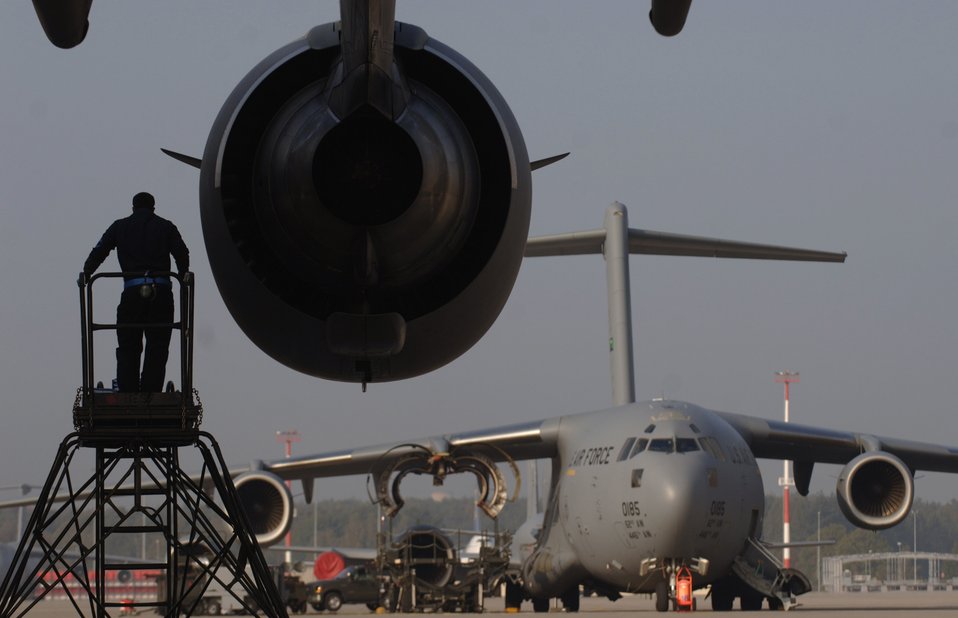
Ramstein flightline ops

Senior Airman Lance Sithammalat climbs down a ladder after adding the last of 17 quarts of synthetic oil to a C-17 Globemaster III at Ramstein Air Base, Germany, Oct. 11. Airman Sithammalat is a crew chief assigned to the 723rd Air Mobility Squadron.